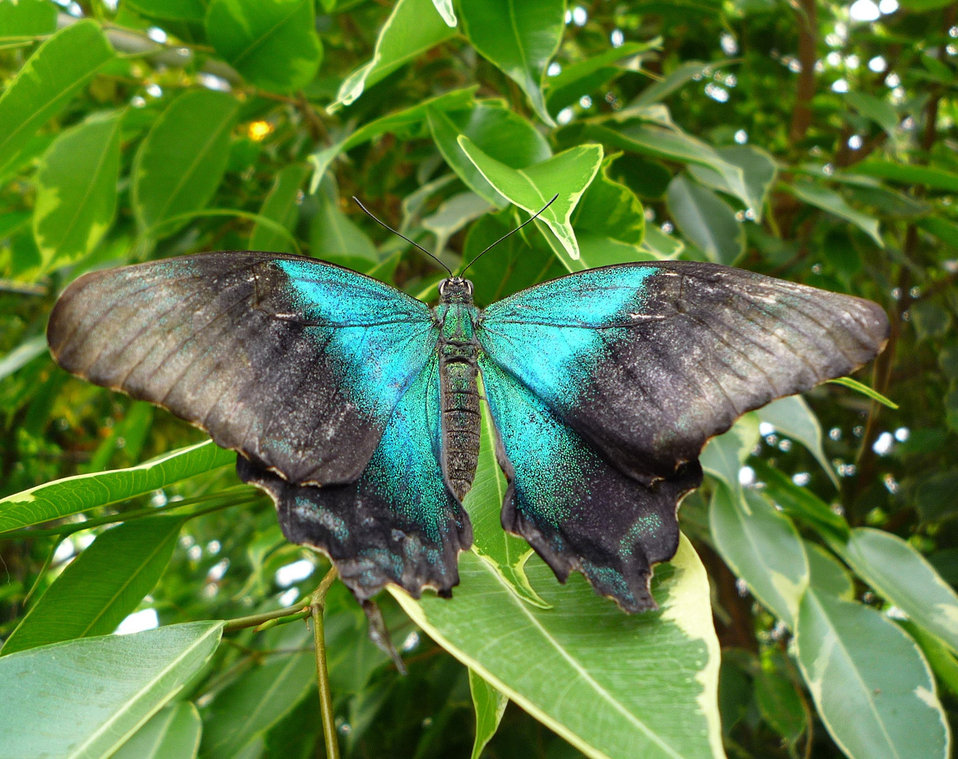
Blue butterfly.